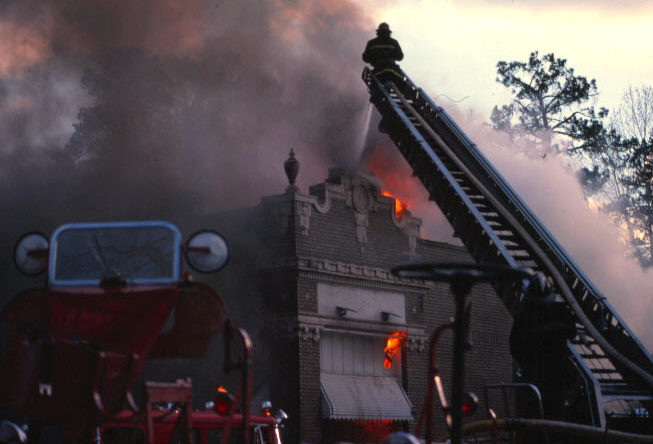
Burning building and firefighter at Emory Village, Atlanta, Georgia.